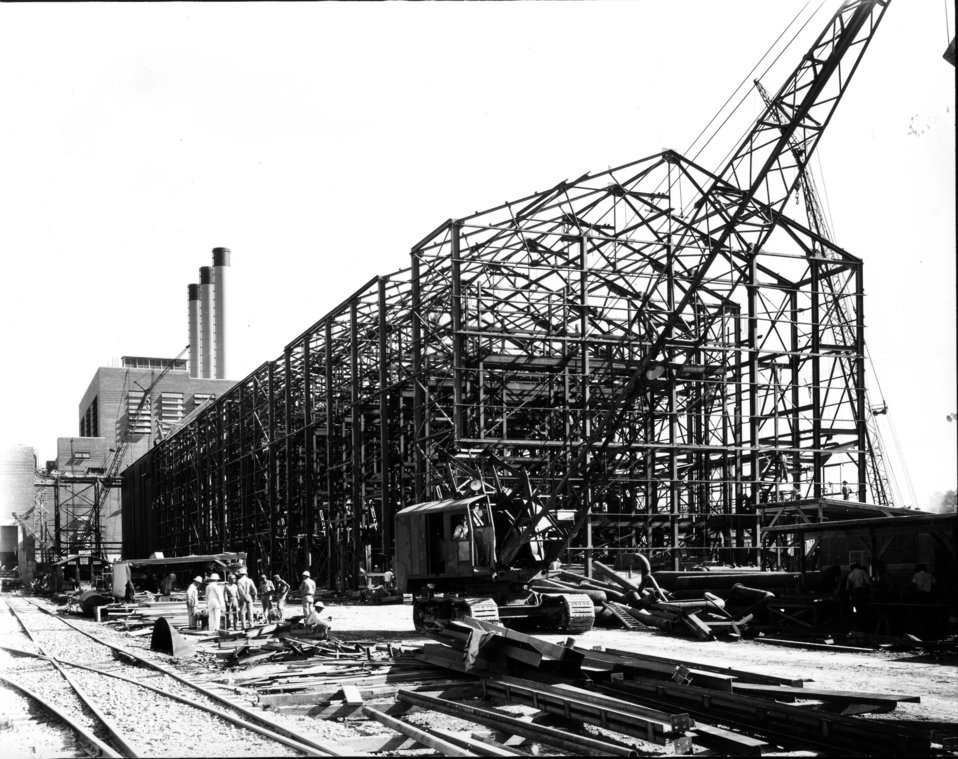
Schools at Oak Ridge